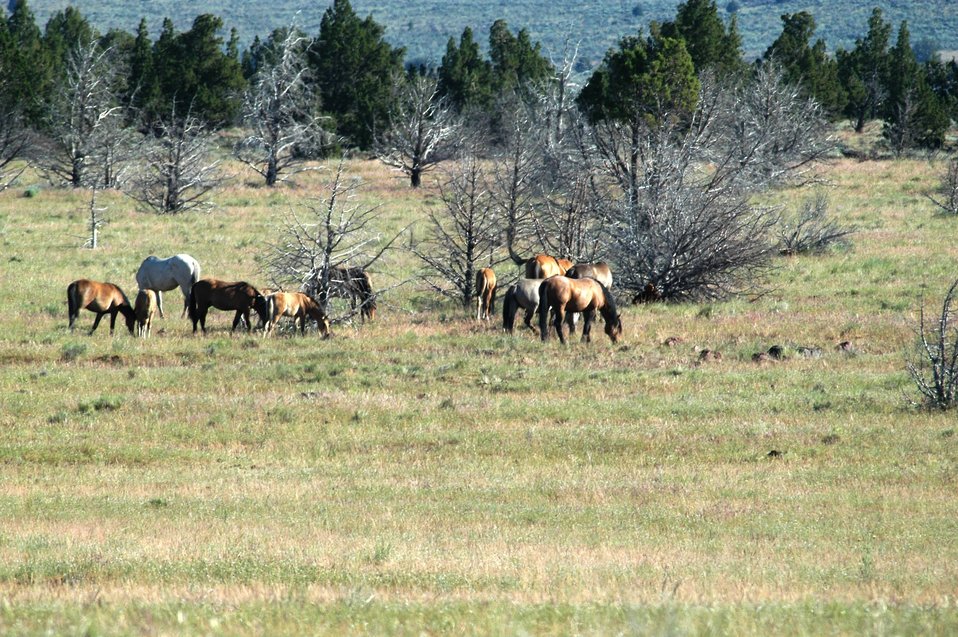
Kiger horses roam the plateaus of the Kiger Wildhorse Herd Management Area near Steens Mountain in Southeastern Oregon.